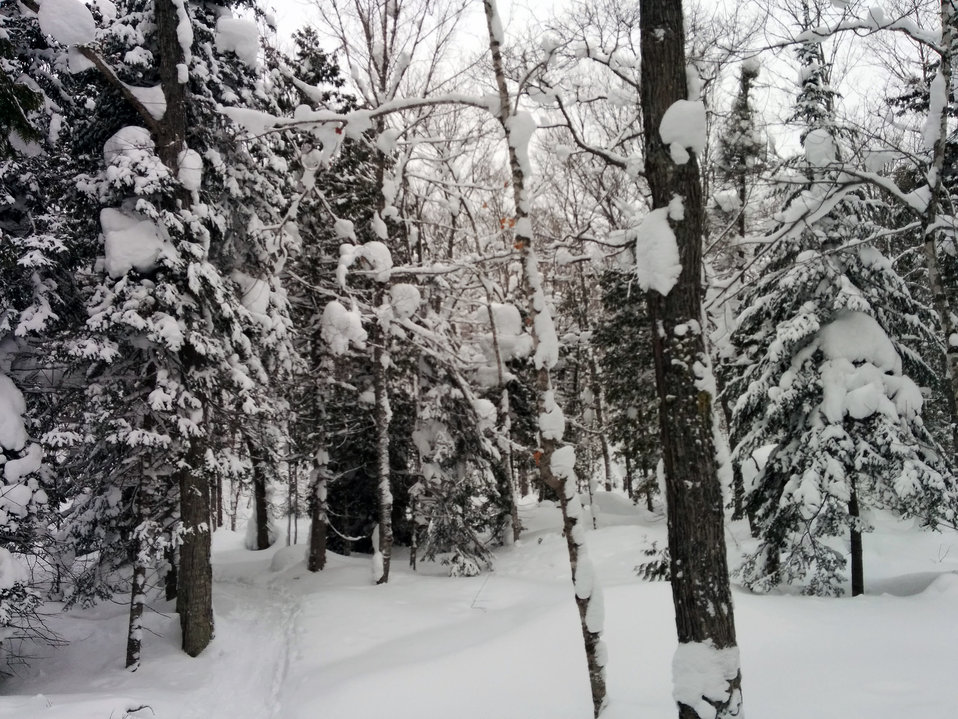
Michigan Snowfall

There’s no shortage of snow in Michigan’s Upper Peninsula this year. Some areas have more than 230 inches of snow. If that was all stacked up in one place it would be nearly 20 feet!

Photo: Snowfall near Copper Harbor, Michigan by Courtney Celley/USFWS.